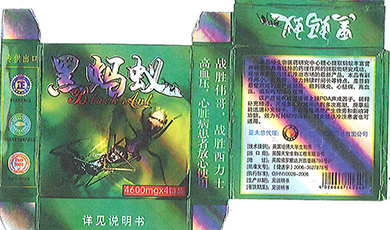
RECALLED – Dietary Supplement

April 1, 2014 – Product Recall – Nova Products, Inc. Issues Voluntary Nationwide Recall of Dietary Supplements with Undeclared Active Pharmaceutical Ingredients.